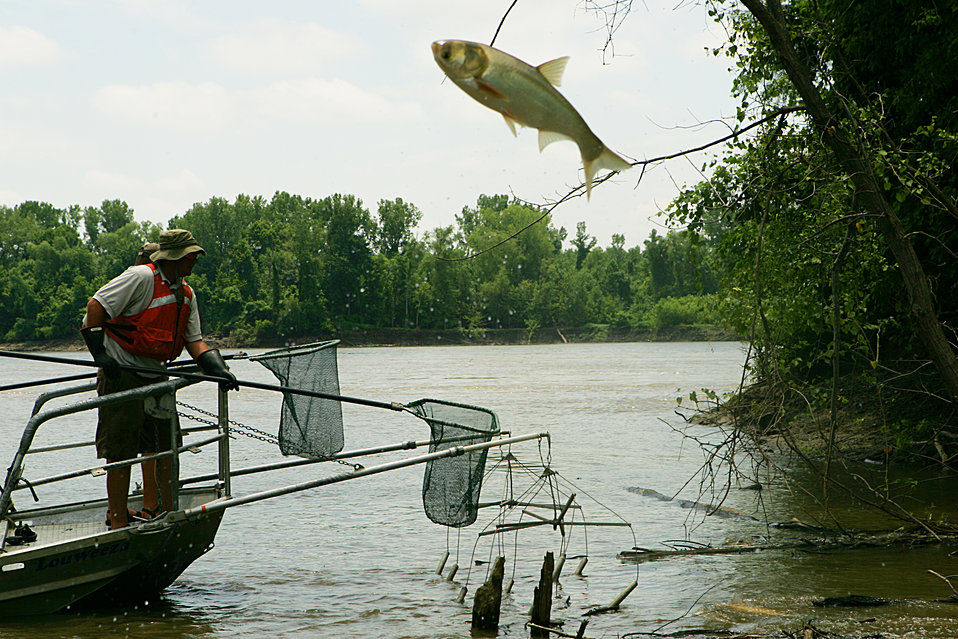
Asian carp

At Big Muddy National Fish & Wildlife Refuge in Missouri, an invasive Asian carp leaps high out of the water to escape biologists’ nets.